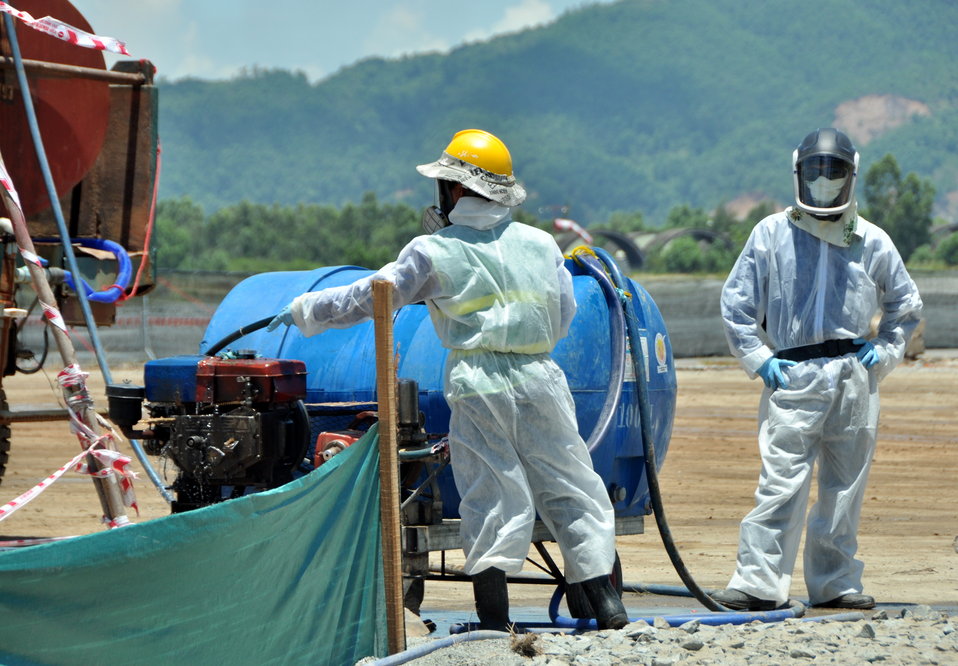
Environmental Remediation Progress at the Danang Airport site

Progress at the Remediation of Dioxin Contamination Project Site

Danang, Vietnam, June 5, 2013